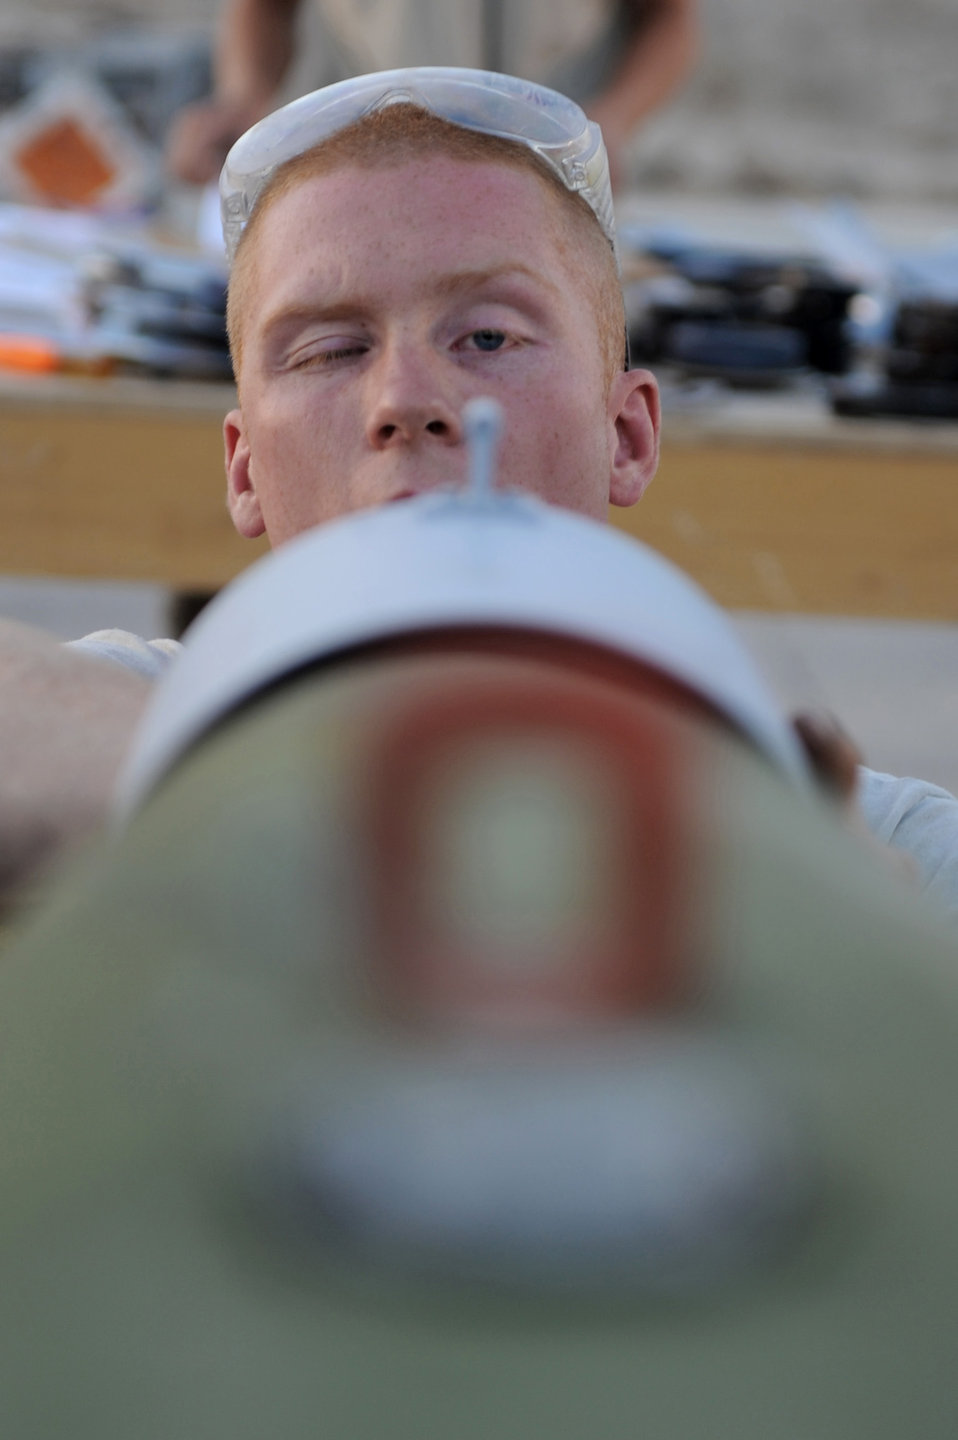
Ammo Airmen

Senior Airman Jesse Santini visually aligns the forward adapter assembly with the suspension lugs on a bomb Aug. 23, 2010, at Kandahar Airfield, Afghanistan. Airman Santini is a munitions systems specialist with the 451st Expeditionary Maintenance Squadron Munitions Flight.